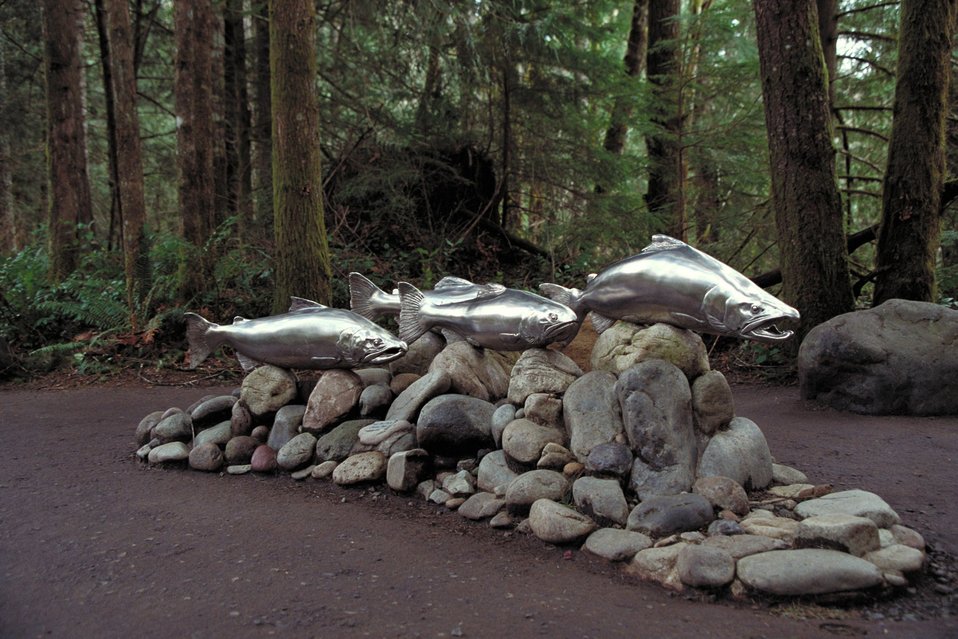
Cascade Stream Watch is an environmental education program conducted at BLM's Wildwood Recreation site.